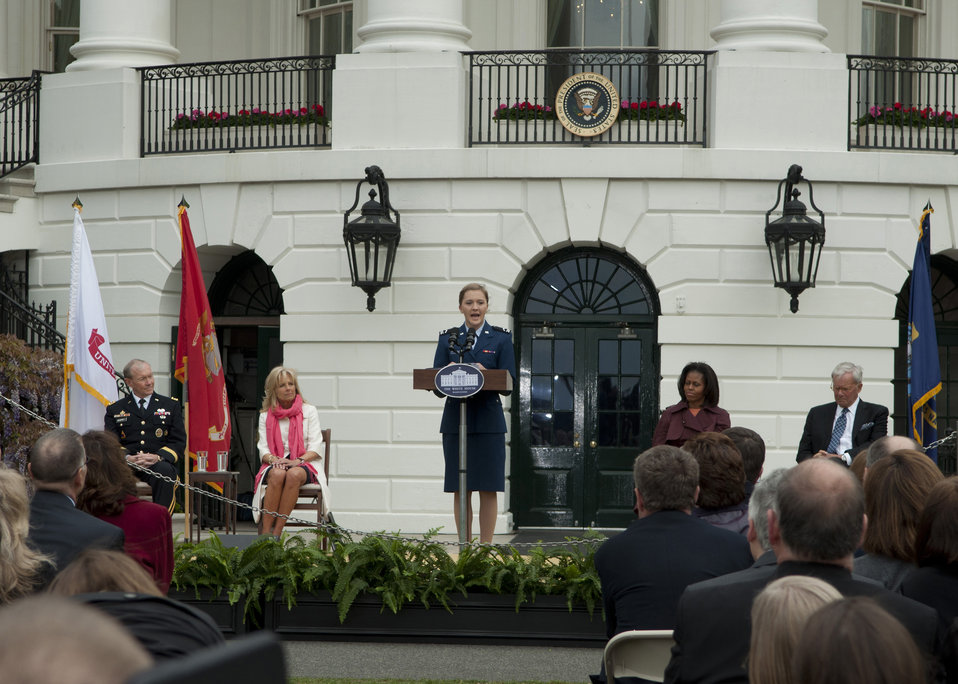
White House marks first Joining Forces anniversary

Cadet Staff Sgt. Moranda Hern, Air Force Academy sophomore, speaks as Chairman of the Joint Chiefs of Staff U.S. Army Gen. Martin E. Dempsey; Jill Biden, the vice-president’s wife; First Lady Michelle Obama; and Tom Brokaw, television journalist, listen at the First Anniversary of Joining Forces ceremony on the south lawn of the White House April 11, 2012. Hern was one of the 20 finalists in the Joining Forces Community Challenge that recognized citizens, communities and organizations for their efforts in supporting military families. .